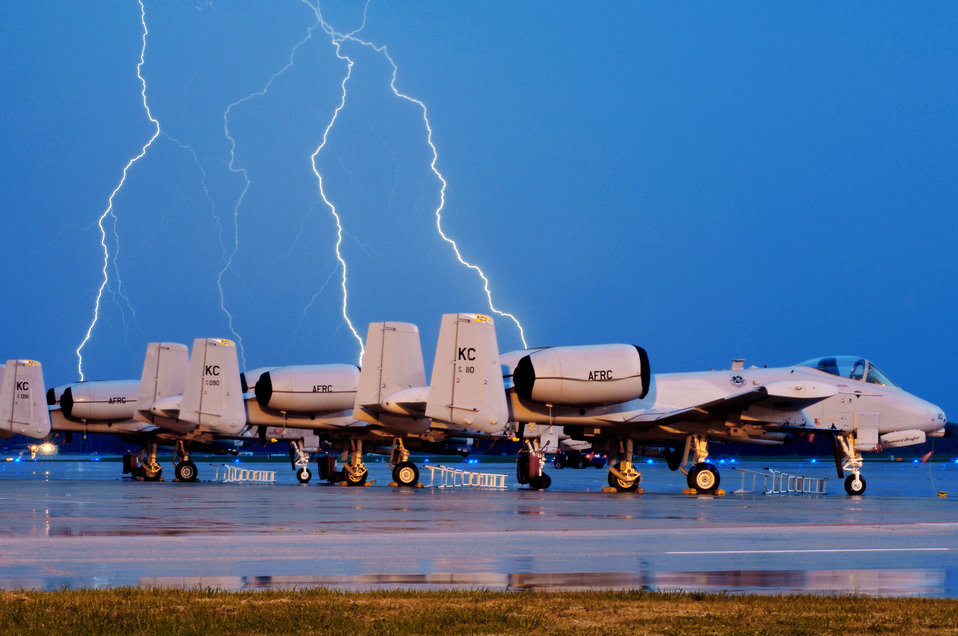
Preemptory strike

Lighting strikes behind A-10 Thunderbolt IIs on the Whiteman Air Force Base, Mo., flightline during an early morning thunderstorm Oct. 20, 2009. The 442nd Fighter Wing maintains a fleet of 27 A-10s.